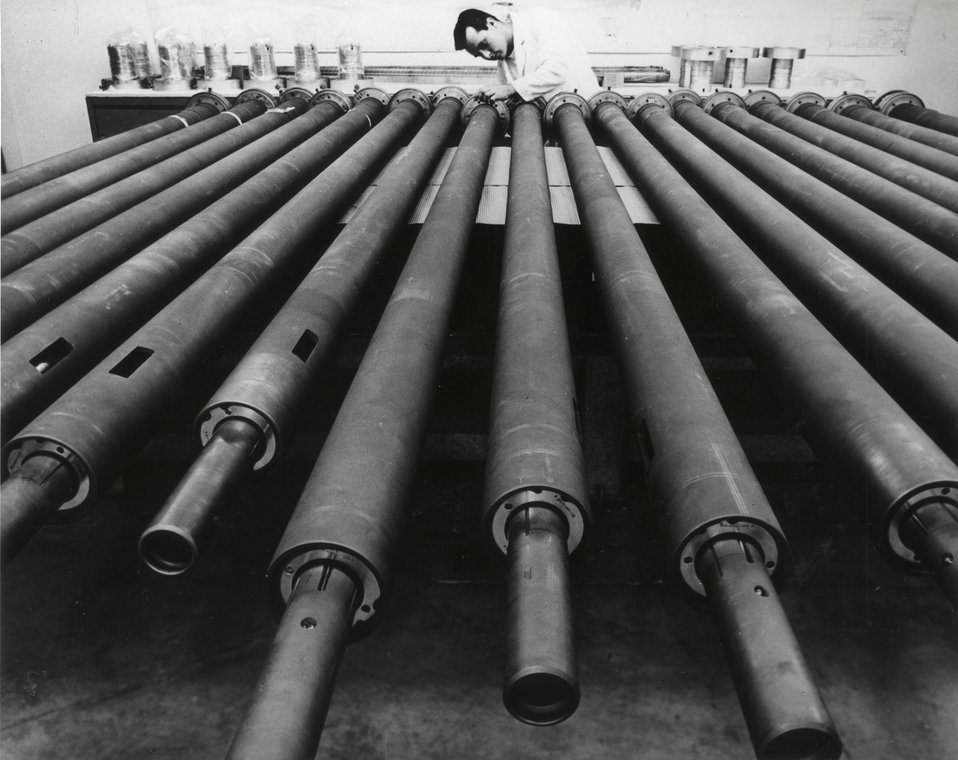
Control rod mechanisms. Photo shows control rod drives for Peach Bottom Atomic Power Station. Circa 1964.